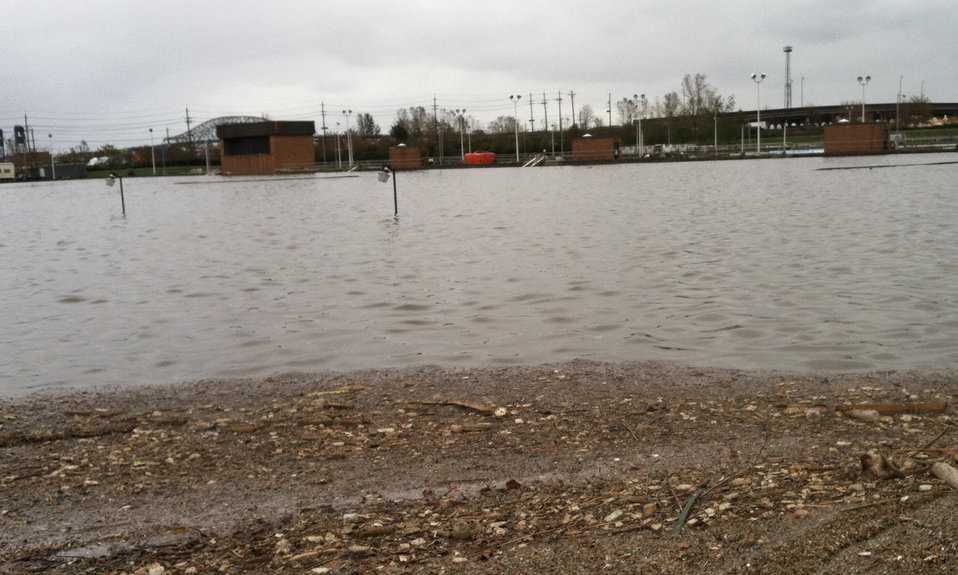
Flooded Newark wastewater treatment plant

A view of the Passaic Valley Sewerage Commission plant in Newark, N.J., partially submerged by Hurricane Sandy’s storm surge, shown in October 2012. The roofs of several plant buildings are just visible above the water line, behind the mostly submerged light poles nearby. One of the U.S. Army Corps of Engineers’ missions under the federal government’s Sandy response and recovery efforts is helping return critical public infrastructure damaged by the storm to service.